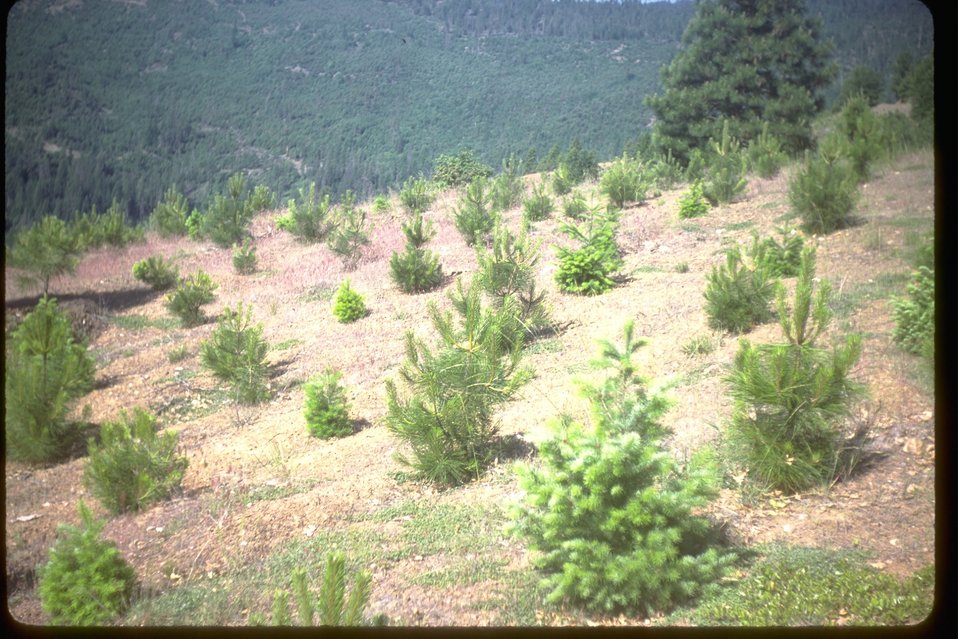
Brushfield Conversion scarification project with planted trees.